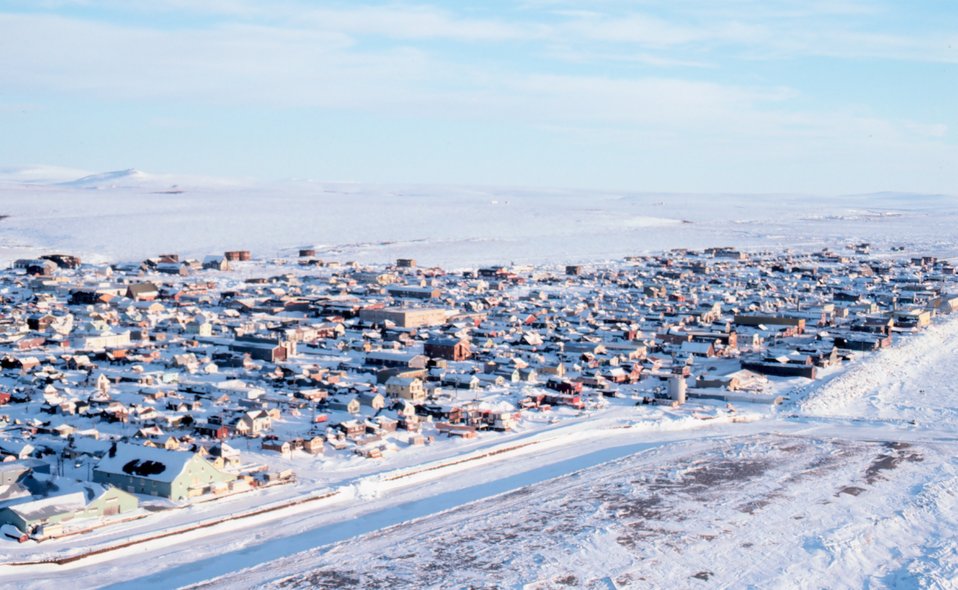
Springtime on Norton Sound.